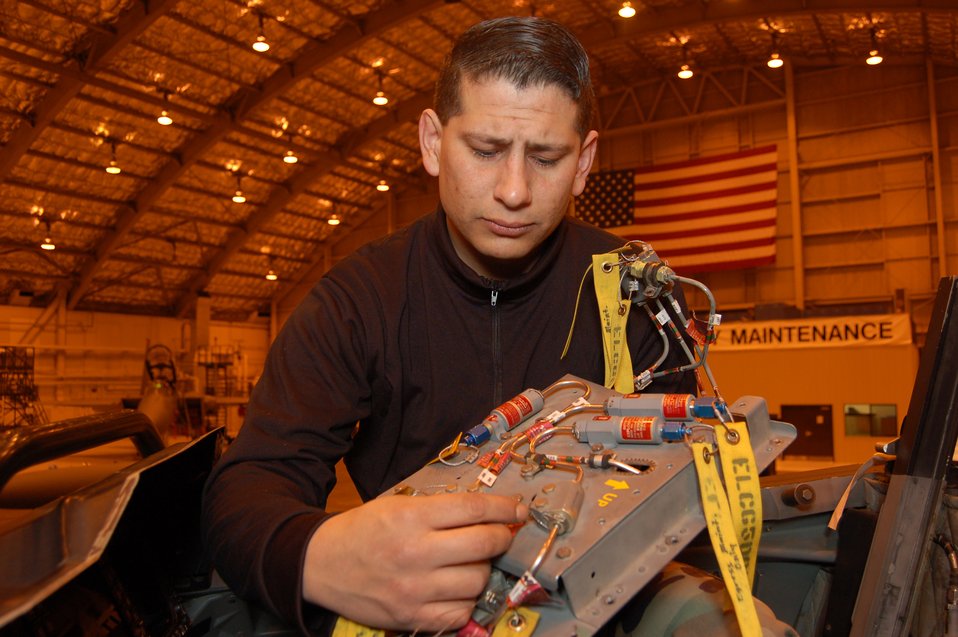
Elmendorf Airmen put AFSO 21 to work

Staff Sgt. Brett Smith performs a pre-installation visual inspection of an egress pyrotechnic module-3 for an F-15E Strike Eagle Feb. 22 at Elmendorf Air Force Base, Alaska. The egress part of the aircraft transfer inspection is one of the steps changed under Elmendorf AFB's Air Force Smart Operations for the 21st century aircraft transfer program. Instead of taking 10 days, the inspection is now complete in three. Sergeant Smith is an aircrew egress craftsman with the 3rd Component Maintenance Squadron.